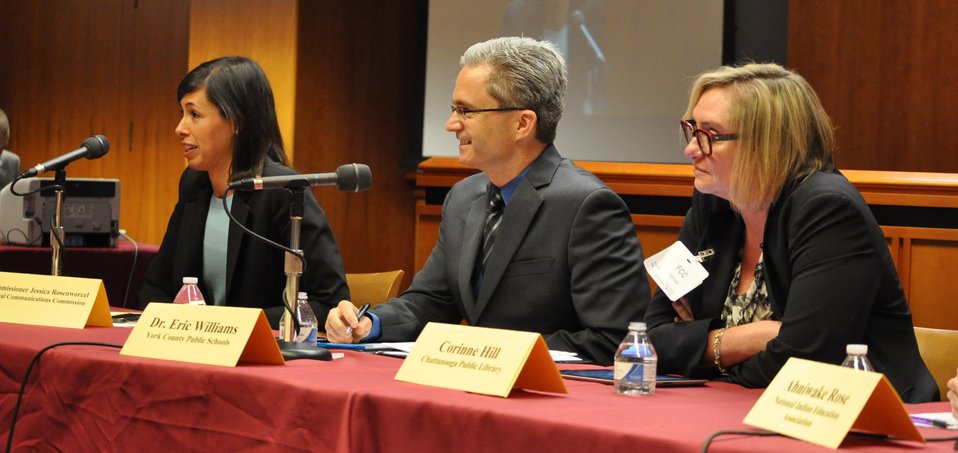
5.6.2014 E-Rate Modernization Workshop

Panel Discussion: Expanding Access to Wi-Fi for Schools and Libraries